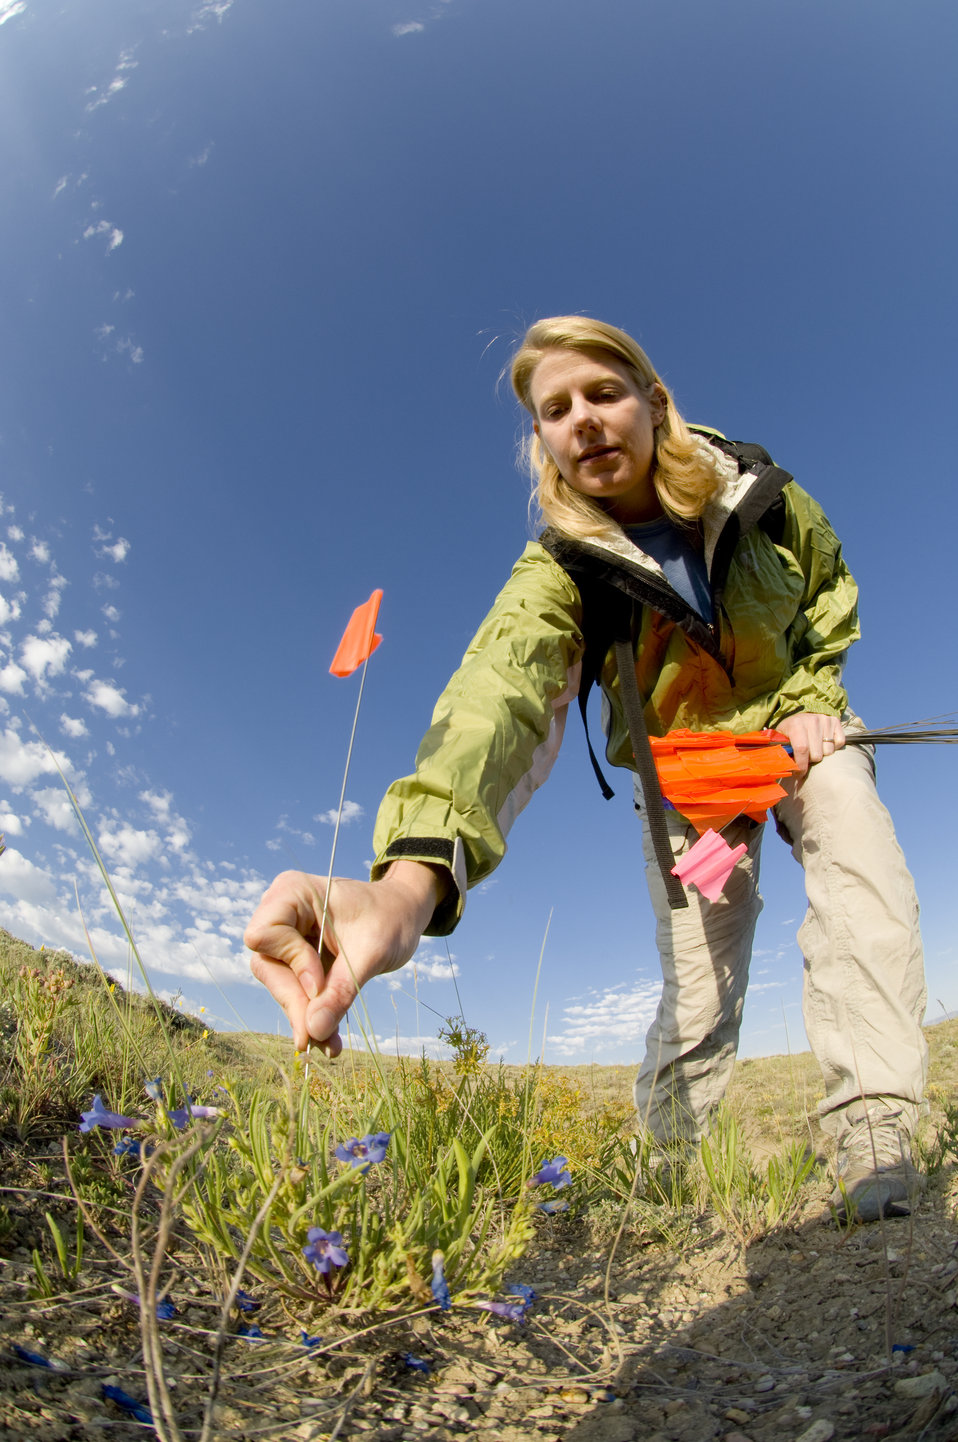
Partner-in-Mission Recovery Champion Jenny Neale

Jenny Neale of the Denver Botanic Gardens received a 2011 Partners-in-MissionRecovery Champion award for conserving endangered and threatened Colorado plants as a member of the Colorado Rare Plants Conservation Initiative (RPCI) .

There are 15 threatened and endangered rare plant species in Colorado; the RPCI team plays a role in recovering all of these species. The RPCI worked to minimize threats to the species such as urban and rural development, oil and gas development, and recreational use among others. The team renewed an emphasis on rare plants, coordinated conservation efforts, maximized and leveraged funding for conservation and research efforts, enhanced and increased volunteer efforts for rare plant conservation, and increased awareness and education for these rare plants.

For more RPCI information please visit: conserveonline.org/workspaces/corareplantinitiative.

For information about the 2011 recovery champions, please visit the U.S. Fish and Wildlife Service’s Recovery Champion website at www.fws.gov/endangered/what-we-do/recovery-champions/inde....